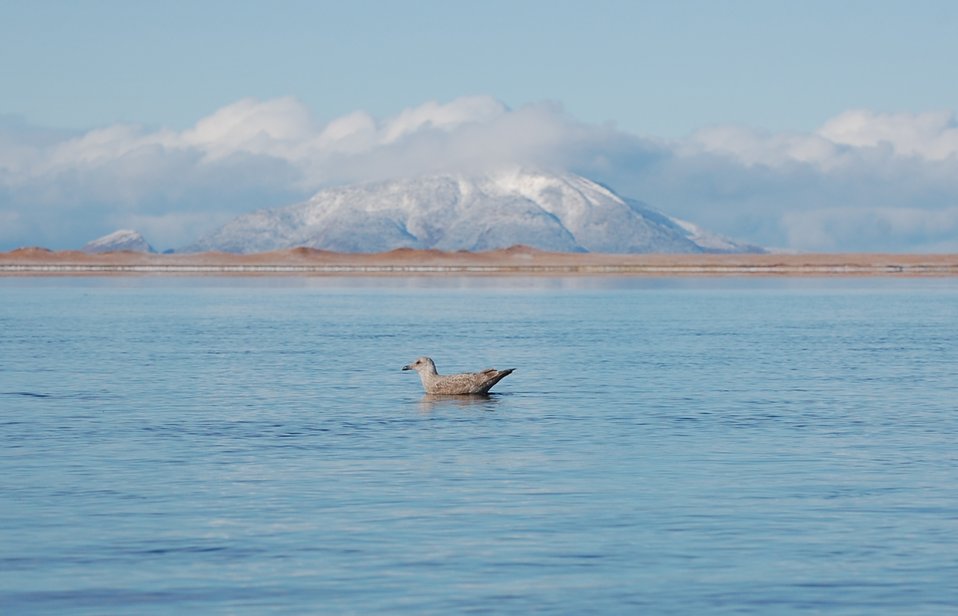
Juvenile Glaucous-winged Gull

Izembek National Wildlife Refuge